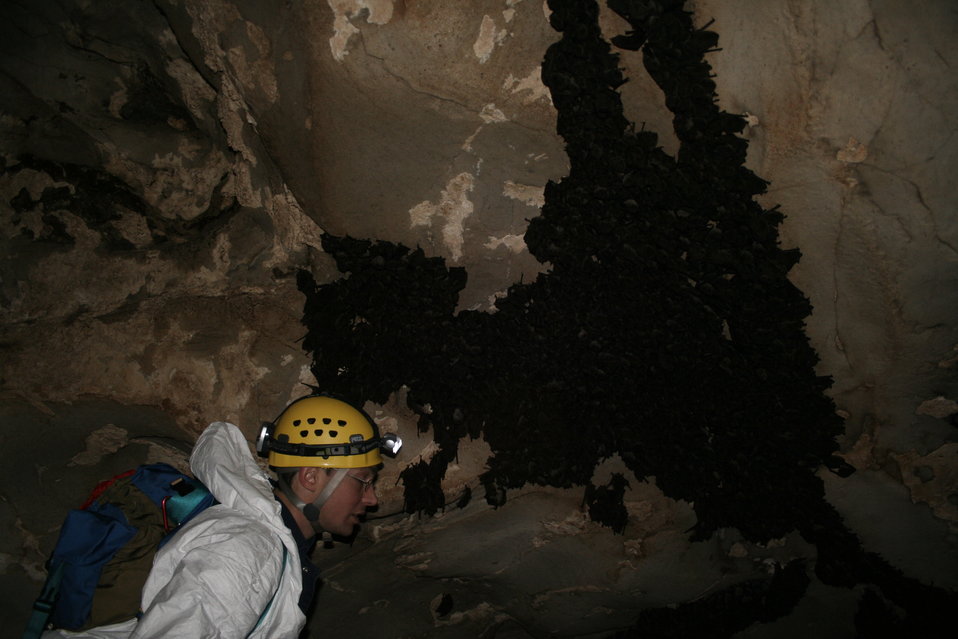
Researcher with cluster of gray bats